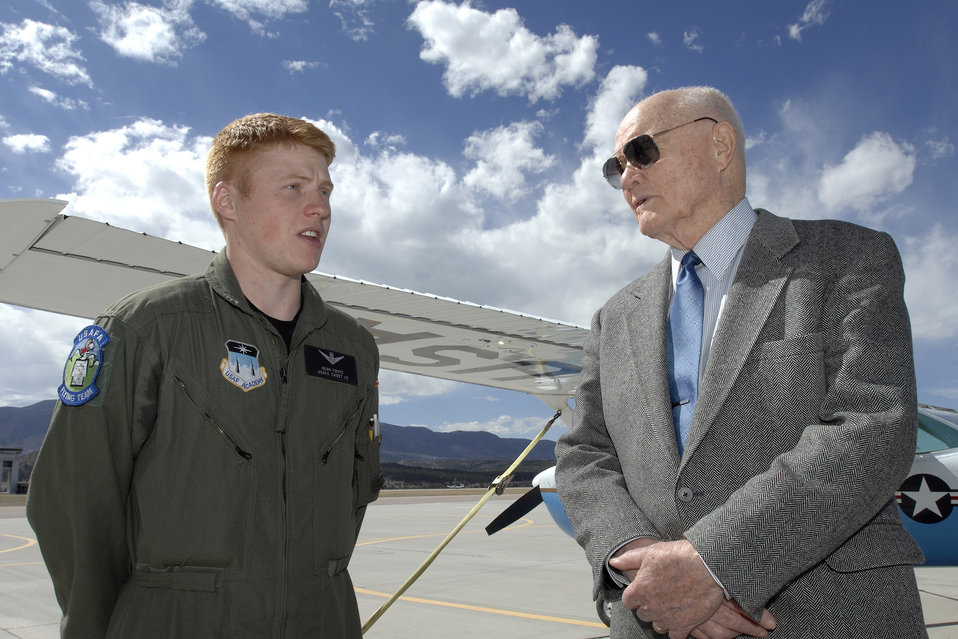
Academy honors Senator Glenn

Cadet 2nd Class Sean Foote briefs Sen. John Glenn about the T-51A trainer on the U.S Air Force Academy airfield April 21. During the senator's 3-day visit, he was honored as the recipient of the 2008 Thomas D. White National Defense Award on the Academys terrazzo in front of the cadet wing.